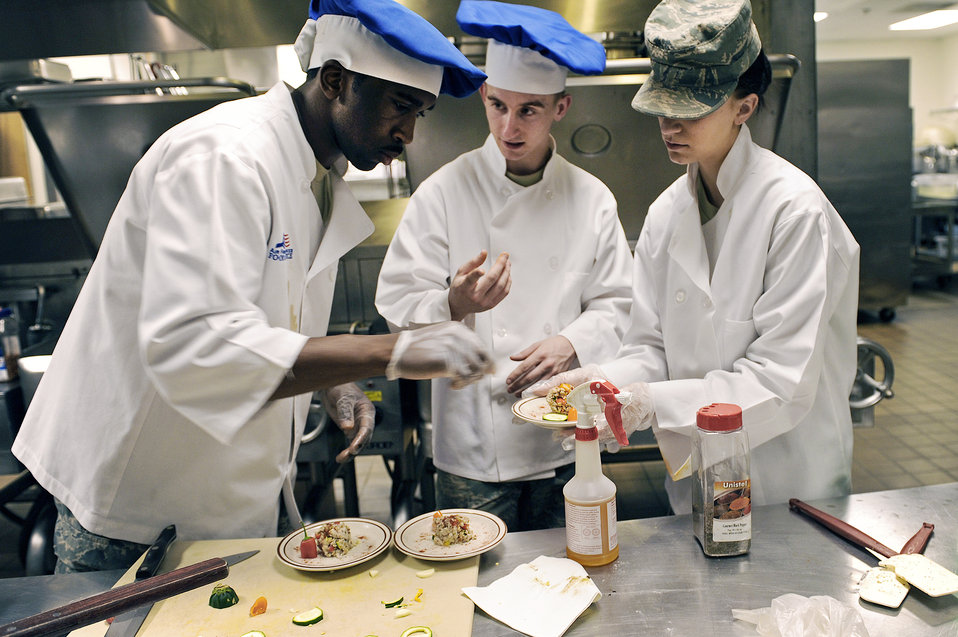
Ellsworth Airmen participate in cooking competition

Airman 1st Class Desmond Boone (from left to right), Airman Anthony Bruhl and Airman 1st Class Ashleigh Morford prepare a milkfish entr?e during the second annual